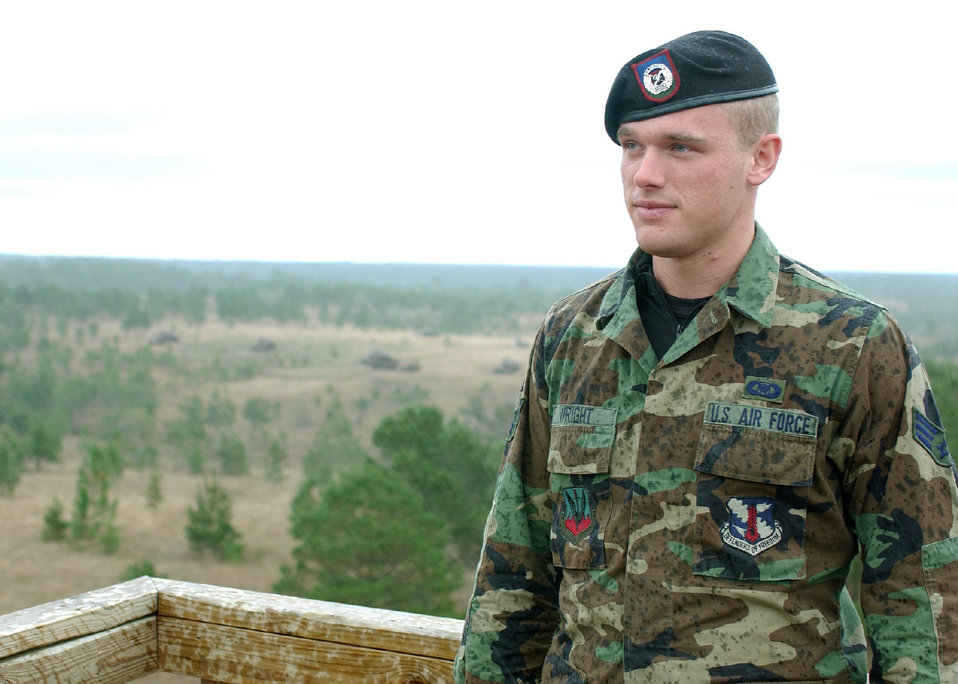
Range control tower dedication honors two Airmen killed in combat

FORT POLK, La. -- Senior Airman Paul Wright stands at the top of the Losano-Frazier Tower here to pay tribute to Staff Sgt. Jacob Frazier, his fellow tactical air control party Airman from the 169th Air Support Operations Squadron of the Illinois Air National Guard in Peoria. Sergeant Frazier was the first tactical controller killed in action since the inception of the career field during the Korean War.